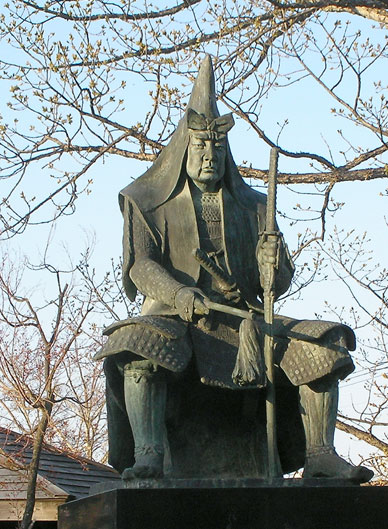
日本語: 上杉神社内の上杉謙信像、投稿者撮影。